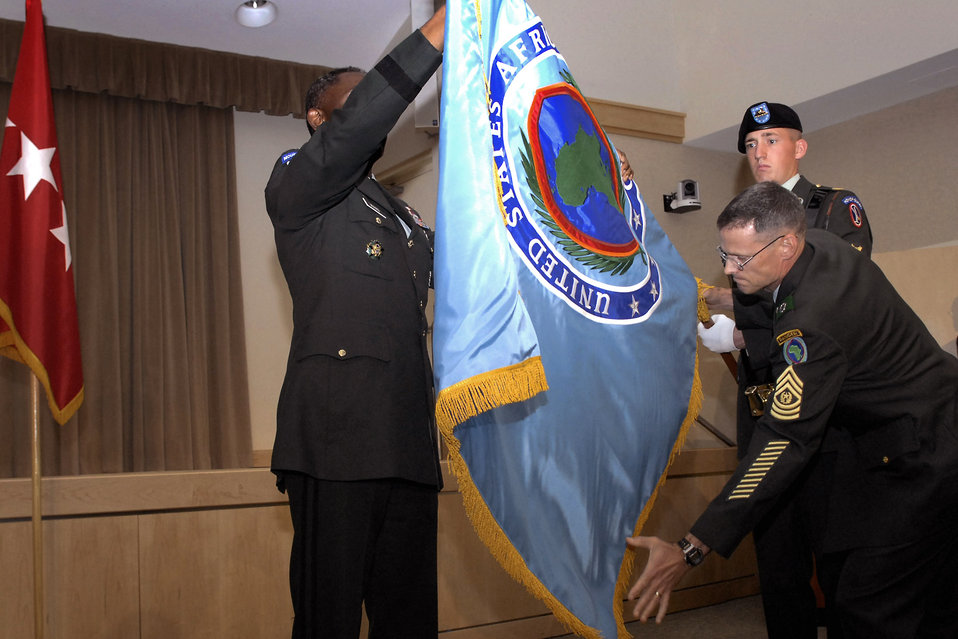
Africa Command unfurls colors

Army Gen. William E.